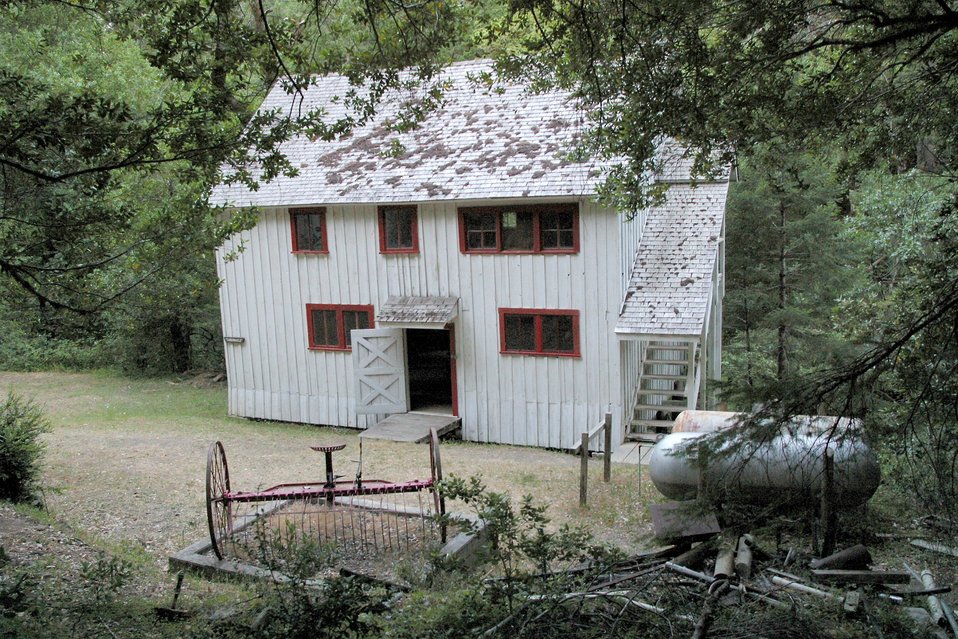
The building at the Rogue River Rance calle the Tabernacle.